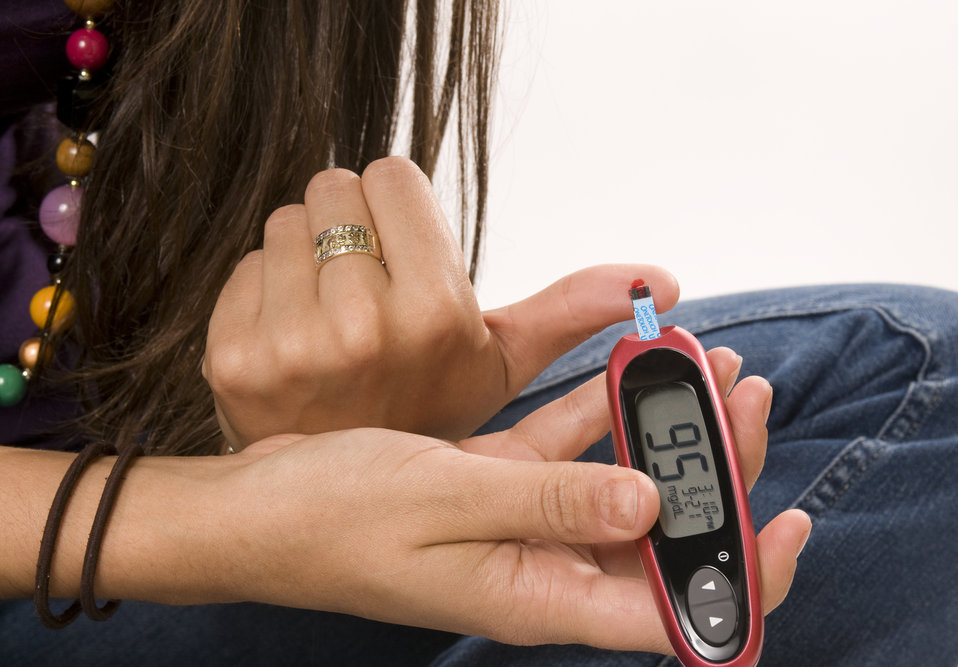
This photograph depicts a young diabetic girl who was in the process of carrying out a self-monitored blood glucose test. After having performed a finger stick, evidenced by the blood droplet seen upon her left thumb, she was about to test the blood glucose level by using a monitoring device she was holding in her right hand, bringing it into contact with the droplet.